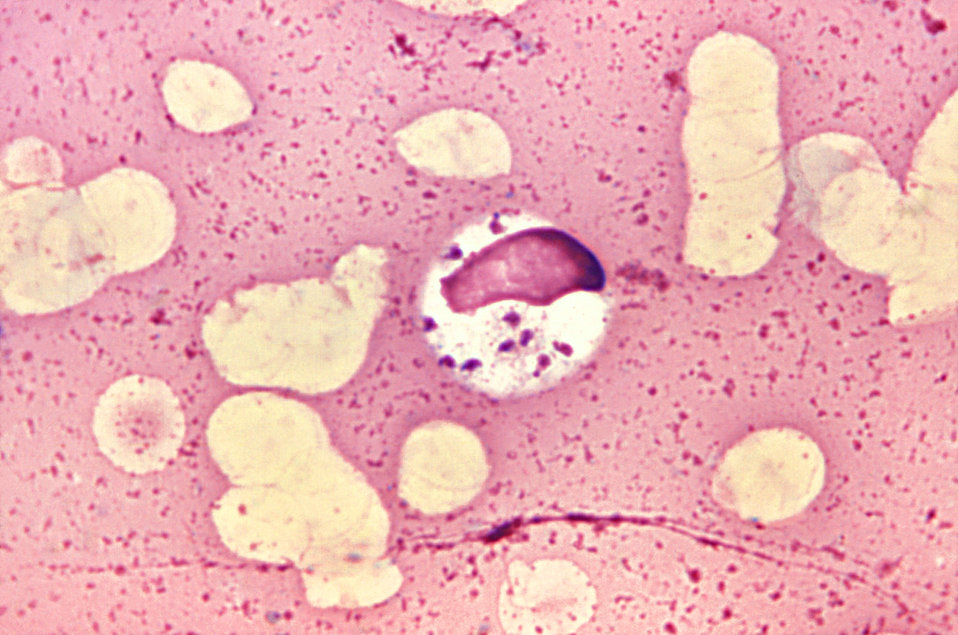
Leishmania donovani in bone marrow cell. Smear. Parasite.